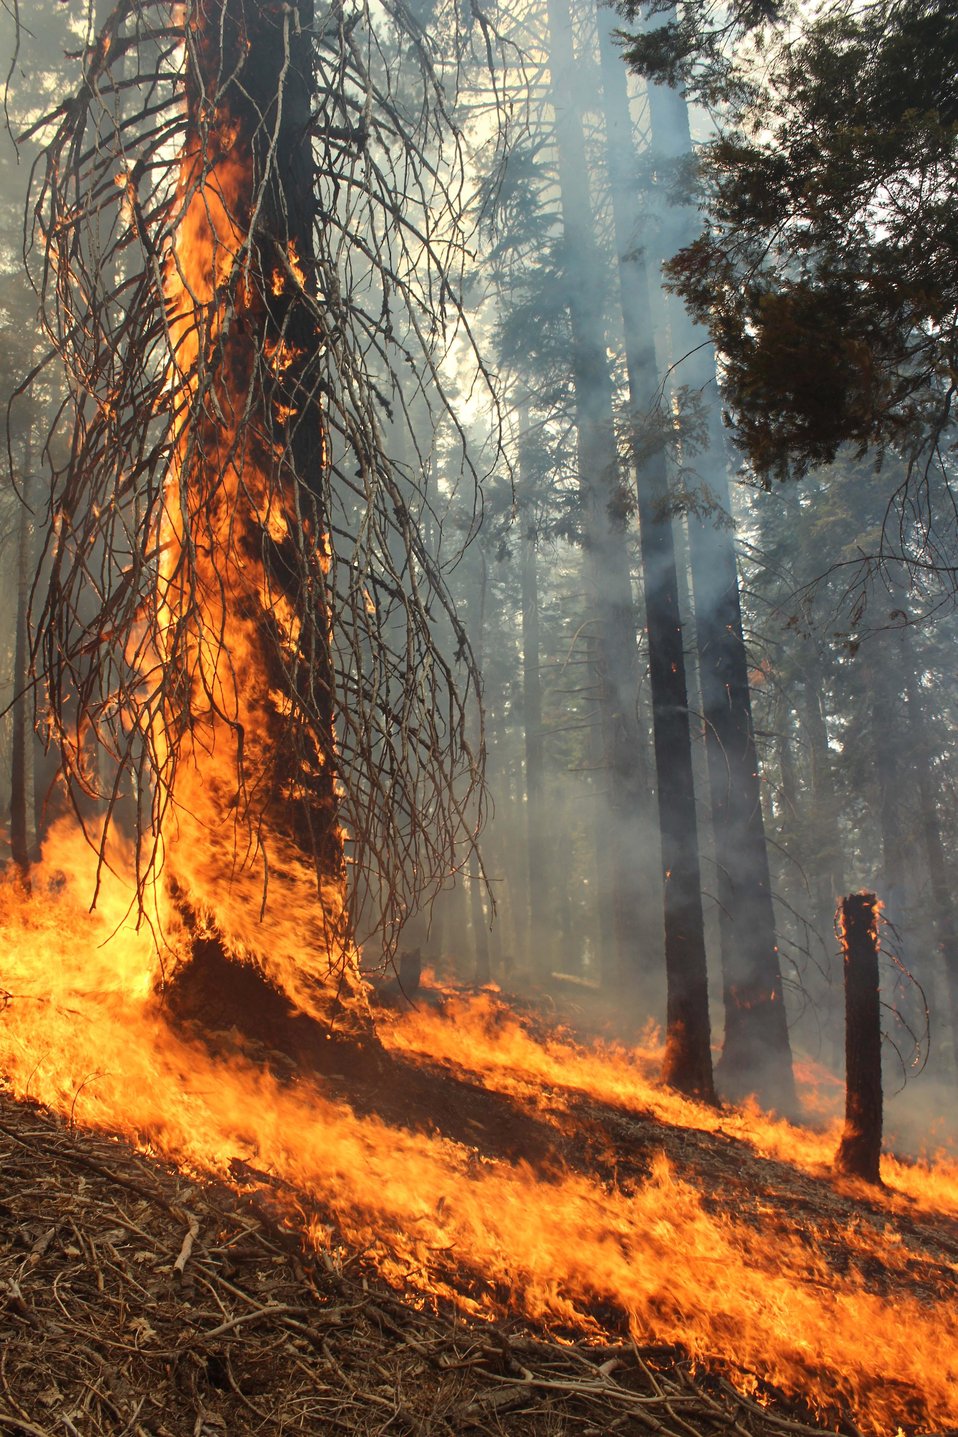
The Rim Fire in the Stanislaus National Forest near in California began on Aug. 17, 2013 and is under investigation. The fire has consumed approximately 235,841 acres and is 70% contained.